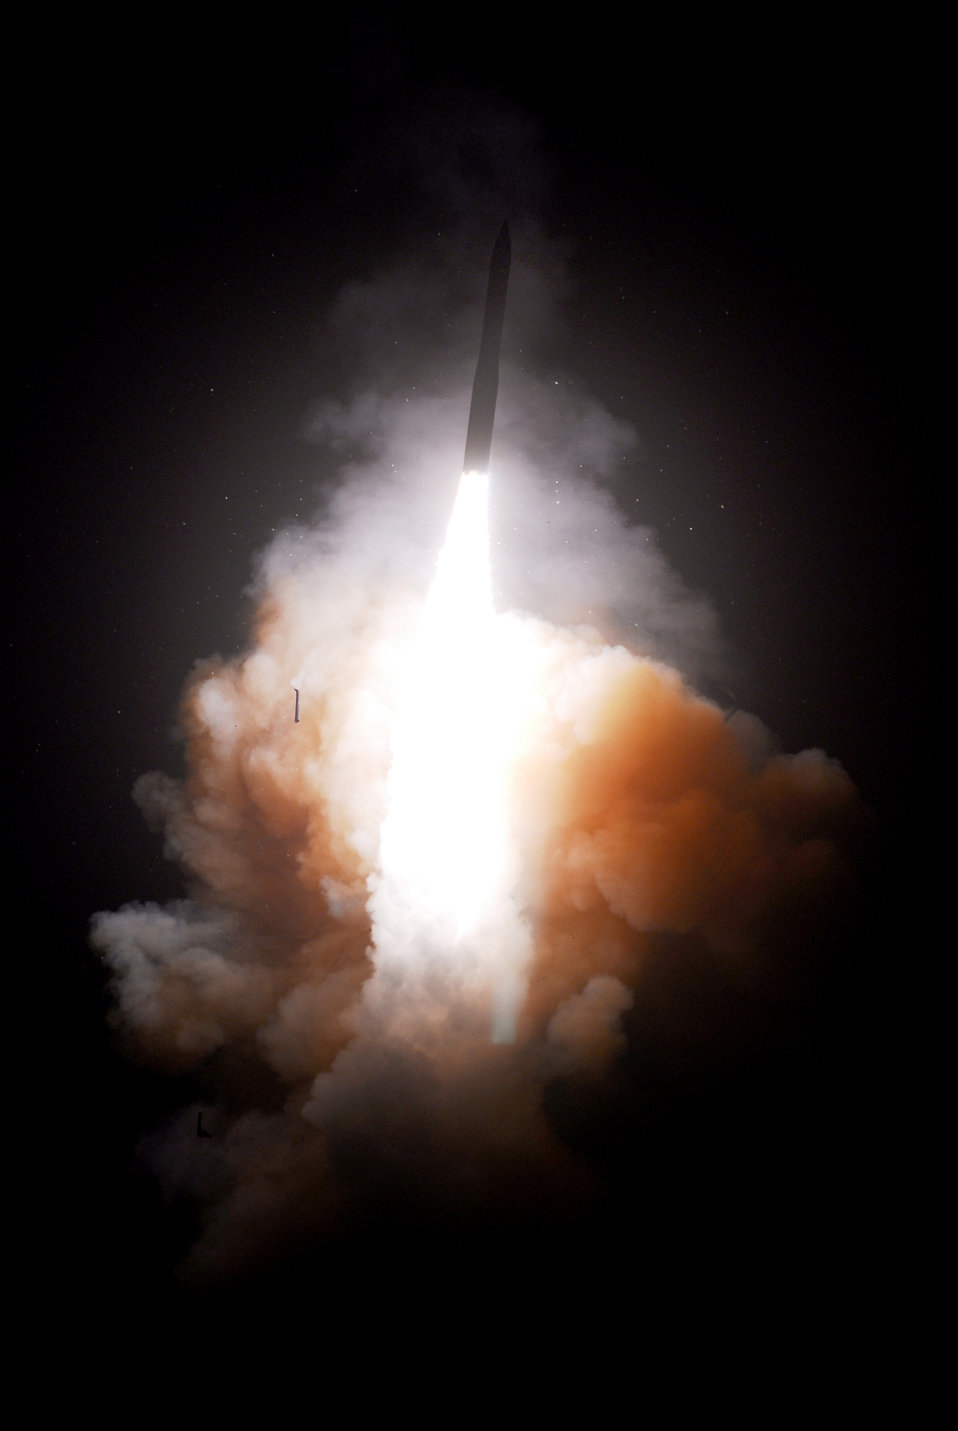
Minuteman III

A Minuteman III intercontinental ballistic missile configured with a National Nuclear Security Administration joint test assembly launches May 22, 2008, from Vandenberg Air Force Base, Calif. The 50th Space Communications Squadron recently completed upgrades to ballistic missile warning sensors communications systems around the world.